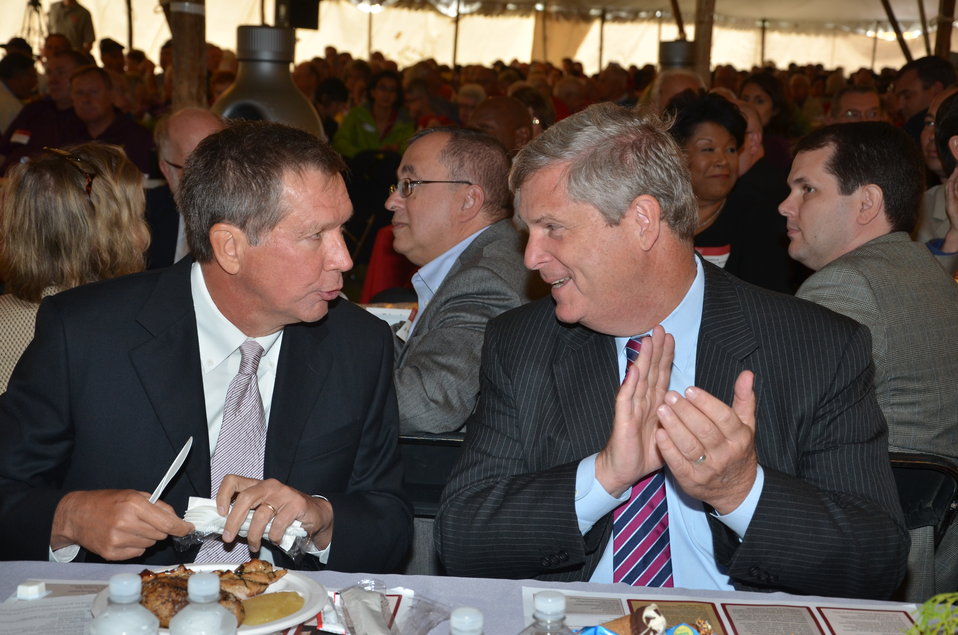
(L to R) Ohio Governor John Kasich with Agriculture Secretary Thomas Vilsack during the Vice President's Luncheon at the Farm Science Review, at Ohio State University in Mansfield, OH., on Tuesday, September 18, 2012.